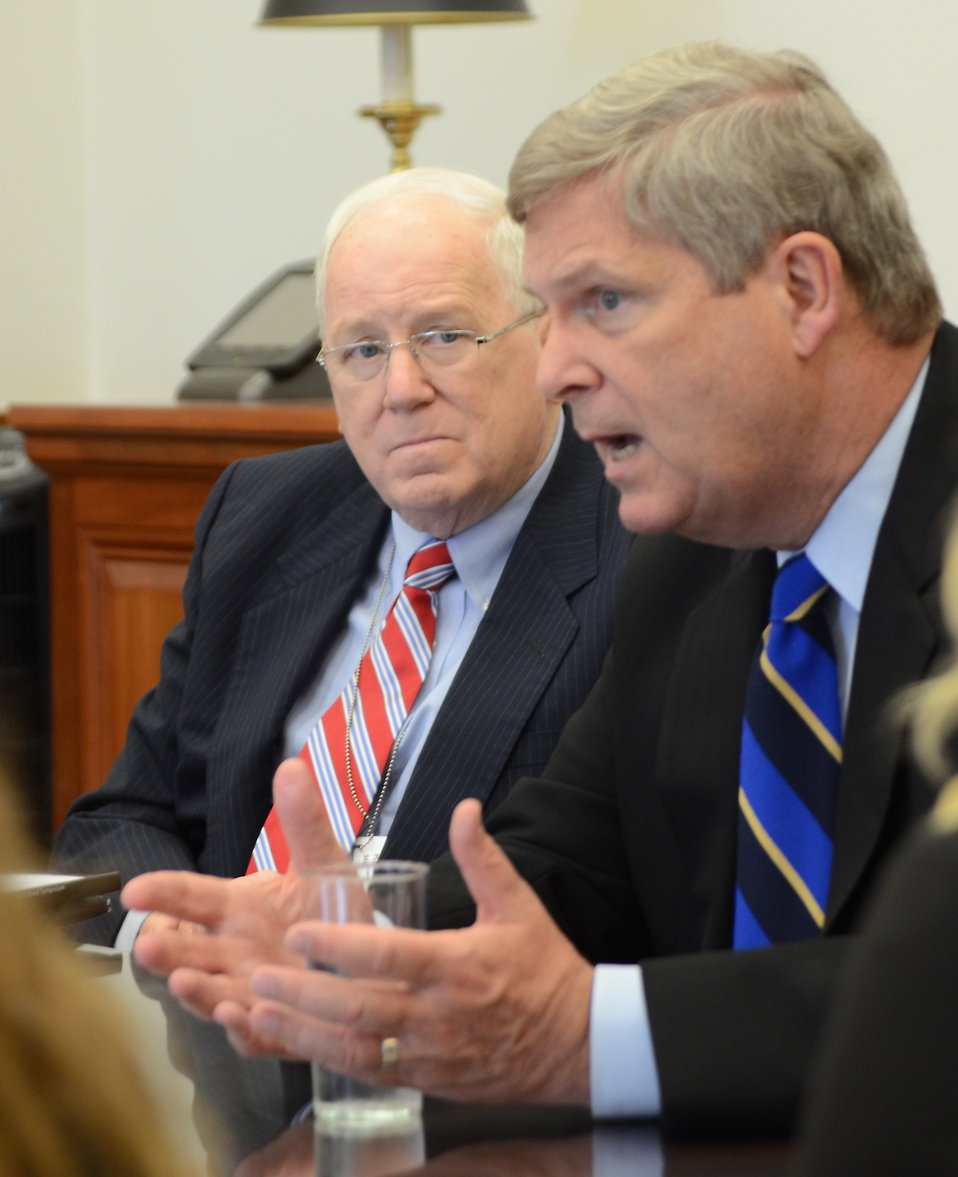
Dr. Kenneth M. Quinn, former U.S. Ambassador to the Kingdom of Cambodia, and Executive Director of the World Food Prize (left) and Agriculture Secretary Tom Vilsack (right) talk with Wallace Carver interns at the Whitten Building, U.S. Department of Agriculture in Washington, D.C., on Thursday, June 14, 2012.